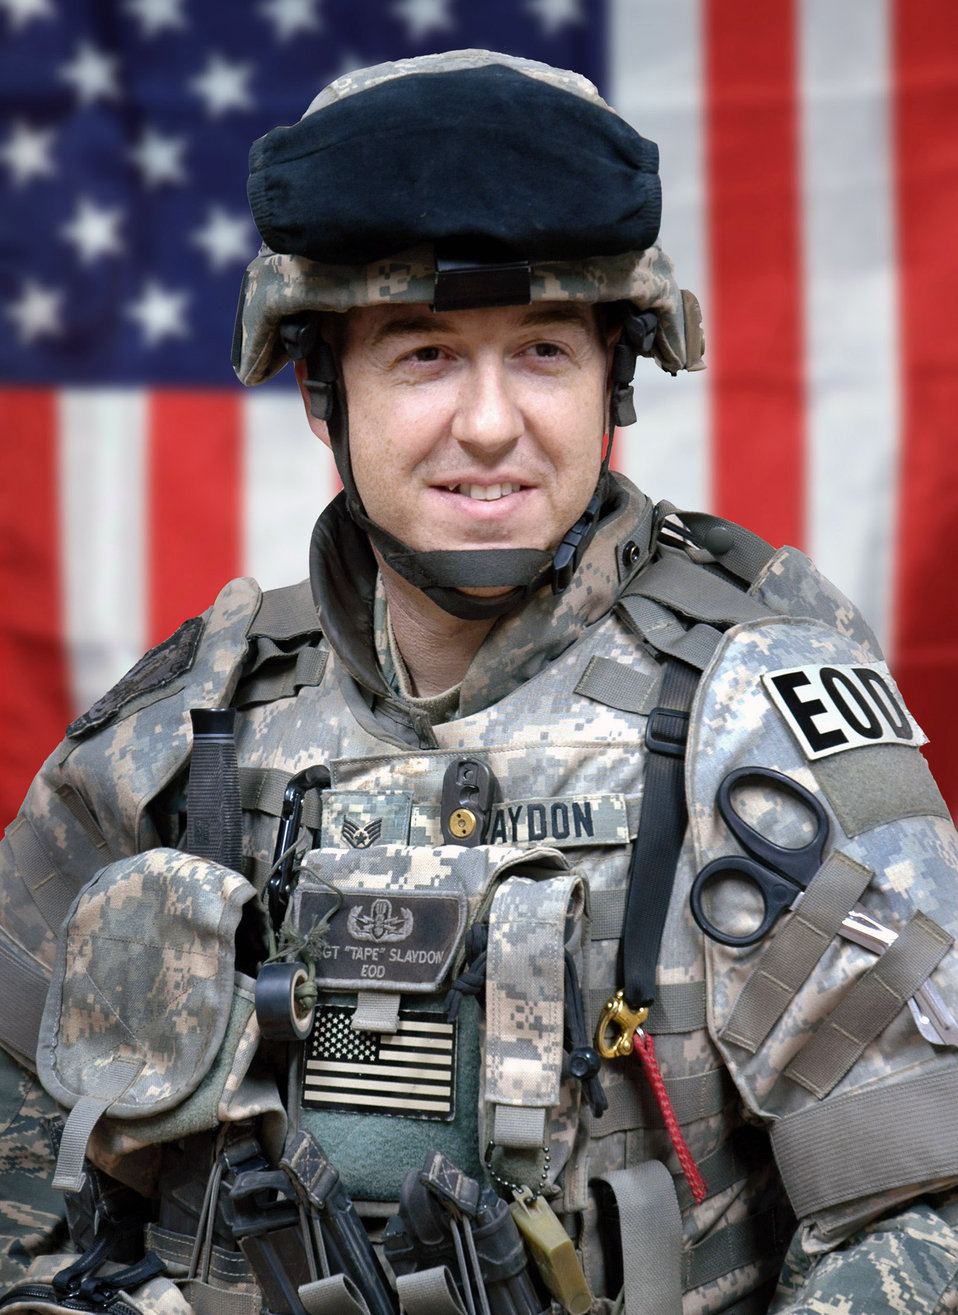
Wounded Warrior: Air Force family helps Purple Heart recipient, wife

Staff Sgt. Matthew Slaydon prior to the attack which robbed him of his sight and one arm, and left him with a multitude of facial lacerations and a collapsed lung. Sergeant Slaydon was on a six-month deployment as an explosive ordnance disposal technician when on Oct. 24, 2007, an IED detonated 2 feet from his face.